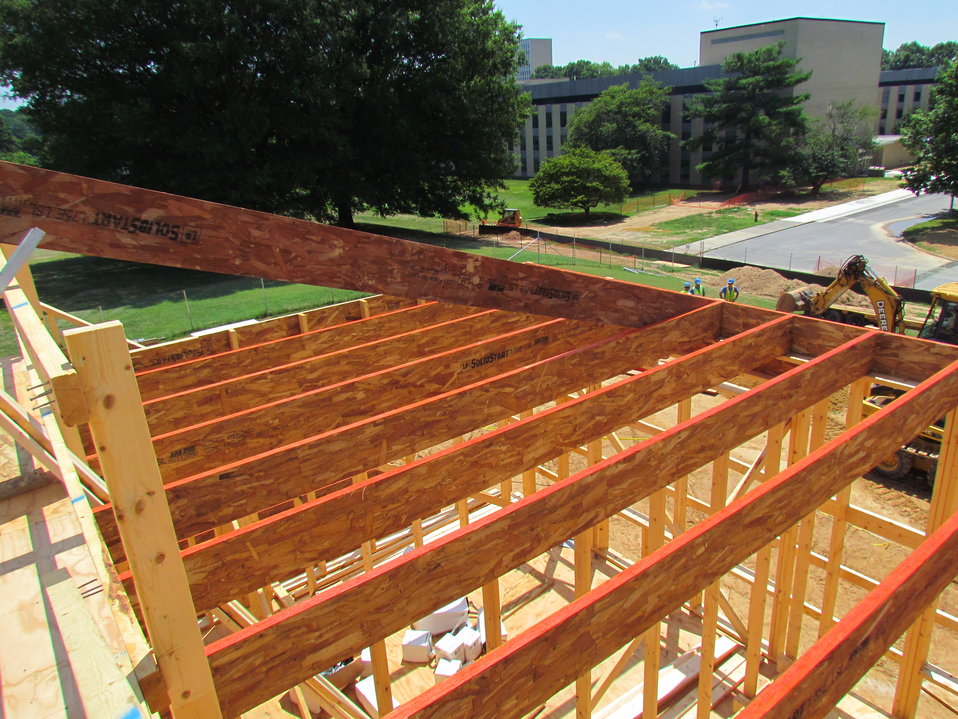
Net-Zero Energy Residential Test Facility - Picture showing attic rafters in place.